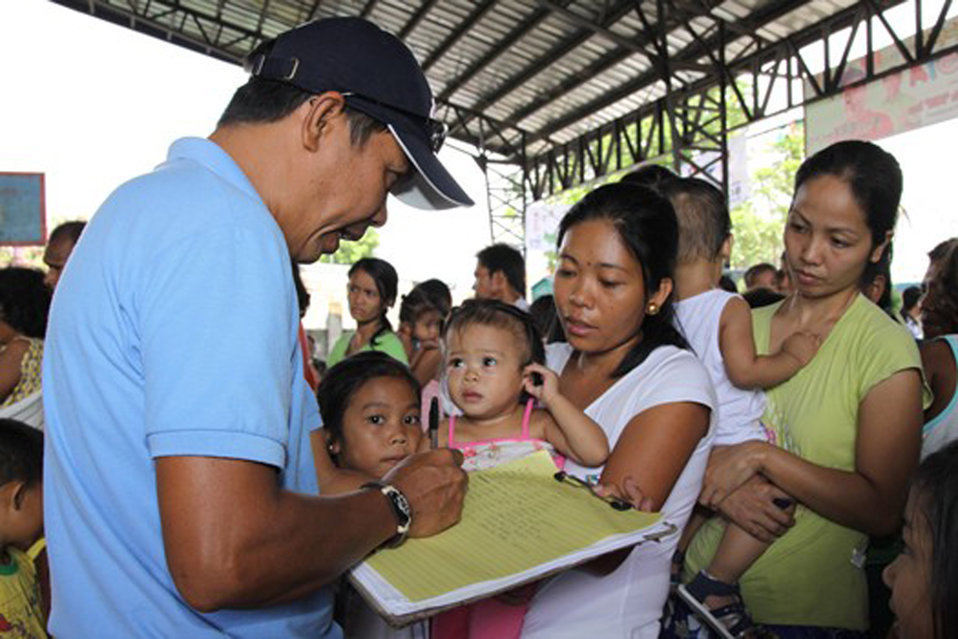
Multinational medical assistance aids Filipino community

A medic helps Filipino patients register before they are seen by civilian and military medical professionals from the United States, Japan, Australia, Indonesia and Papua-New Guinea May 4 at Sapang Bato, Philippines. The medics are in the Philippines to provide much-needed medical care during the 2009 Association of Southeast Asian Nations Regional Forum Voluntary Demonstration of Response on Disaster Relief.